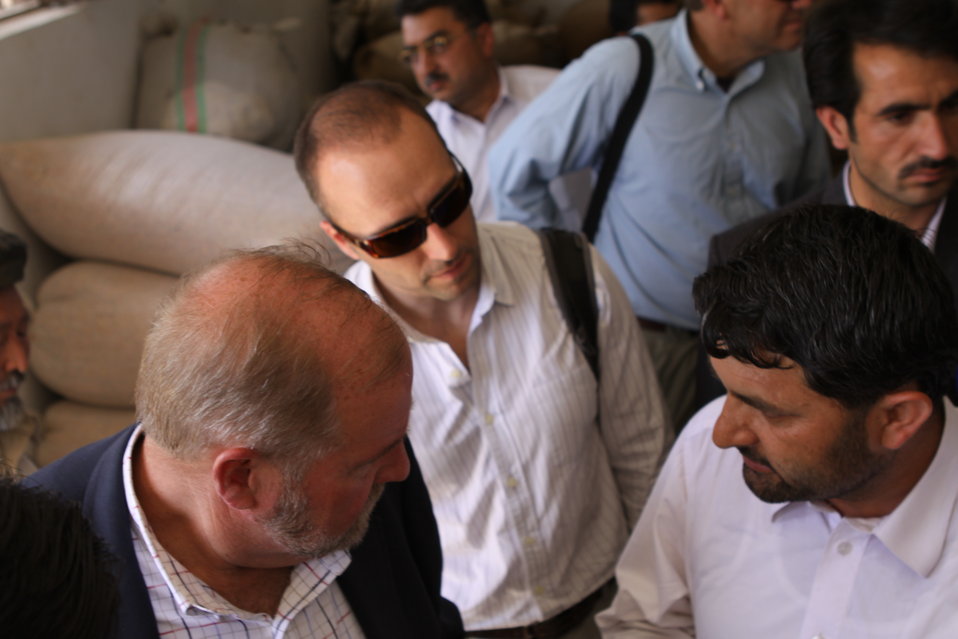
Bolan Poultry Farm